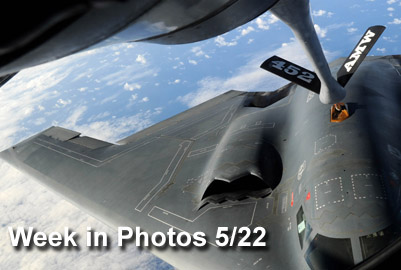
Week in photos, May 22, 2009

Air Force Week in Photos for May 22 highlights photos from around the Air Force. In this photo by Senior Airman Christopher Bush, a KC-135 Stratotanker refuels a B-2 Spirit over the Pacific Ocean May 12 near Andersen Air Force Base, Guam.